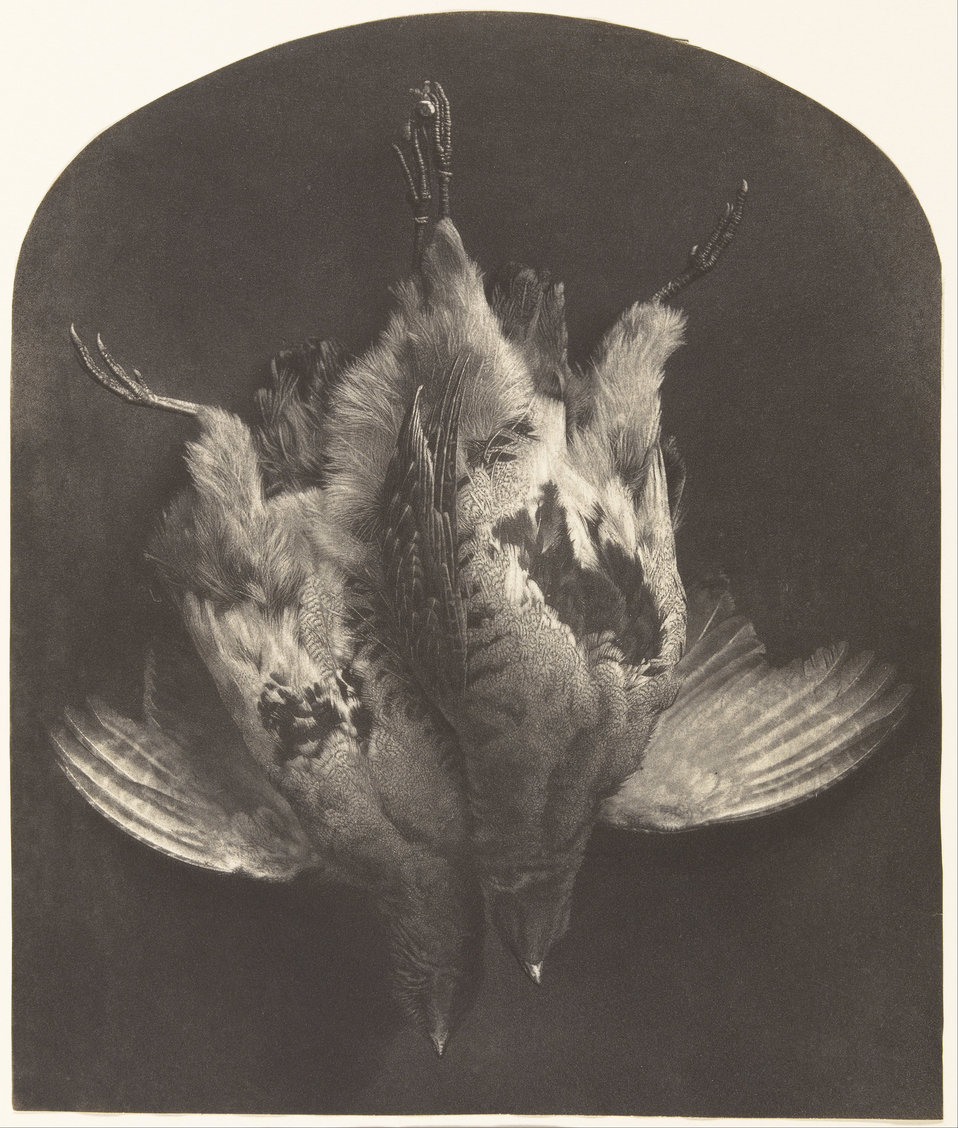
(A Brace of Grouse) - Google Art Project